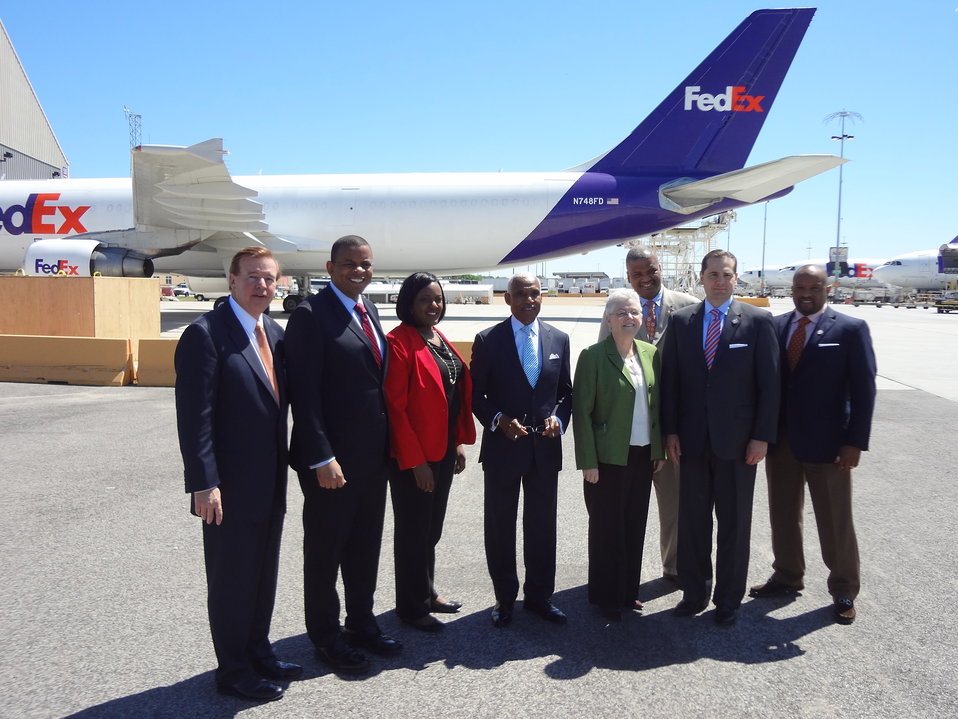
Touring the FedEx Cold Chain Facility

Administrator Gina McCarthy, DOT Secretary Anthony Foxx, Memphis Mayor AC Wharton, FedEx President and CEO David Bronczek, Delta Regional Authority Co-Chairman Chris Masingill, and others toured Fed Ex Cold Chain Facility in Memphis. The facility is located in the Aerotropolis Planning District, a unique airport community being developed with assistance from HUD and DOT.